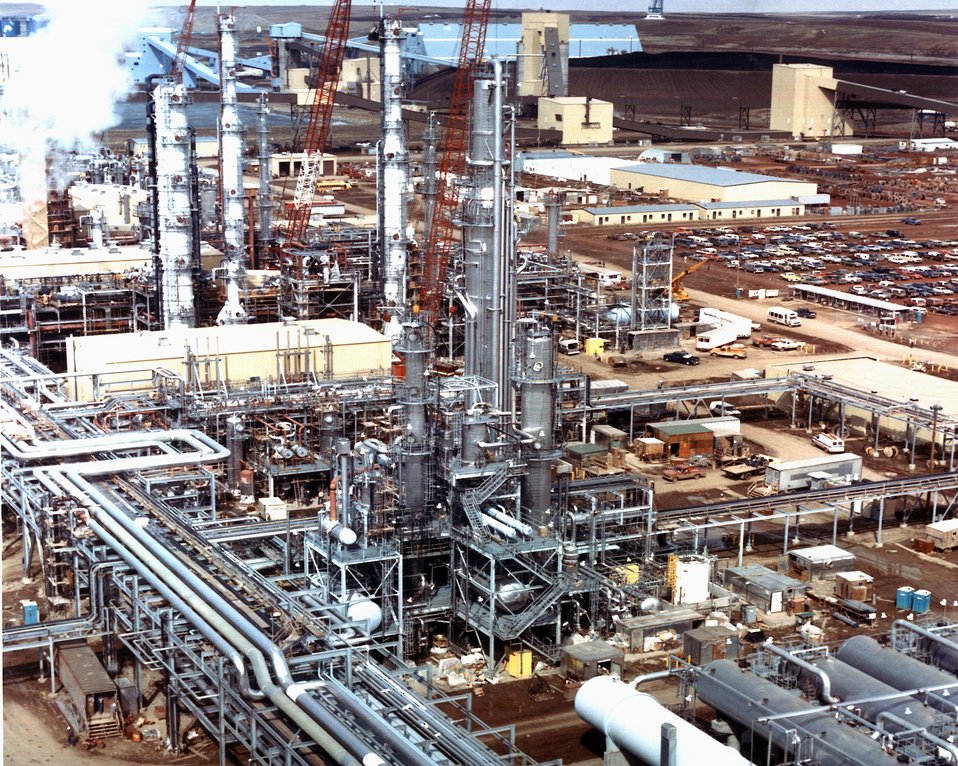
CLOSE-UP AERIAL SHOWING THE AMMONIA RECOVERY UNIT. AT LEFT IS THE MAIN PIPELINE.

THE GREAT PLAINS COAL GASIFICATION PLANT WILL PRODUCE AN AVERAGE OF 125 MILLION CUBIC FEET PER DAY OF SYNTHETIC HIGH-BTU GAS. THIS GAS, A DIRECT SUBSTITUTE FOR NATURAL GAS, IS TO BE MARKETED THROUGH AN INTERSTATE NETWORK OF GAS PIPELINES. APPROXIMATELY 14,000 TONS OF LIGNITE WILL BE FED EACH DAY INTO 12 LURGI GASIFIERS (2 ADDITIONAL GASIFIERS WILL BE KEPT ON STANDBY). GAS EXITING THE GASIFIERS WILL BE COOLED, CLEANED OF SULFUR, AMMONIA, AND OTHER IMPURITIES, THEN UPGRADED TO A PIPELINE QUALITY SYNTHETIC NATURAL GAS. THE LURGI PROCESS WILL USE THE LARGER-SIZED COAL FROM THE PLANT'S COAL CRUSHING OPERATION WHILE SOME 8,000 TONS PER DAY OF THE SMALLER SIZE COAL WILL BE SOLD TO AN ADJACENT STEAM ELECTRIC GENERATING PLANT. THE GREAT PLAINS PLANT WILL ALSO PRODUCE 93 TONS PER DAY OF AMMONIA AND 85 TONS PER DAY OF SULPHUR.